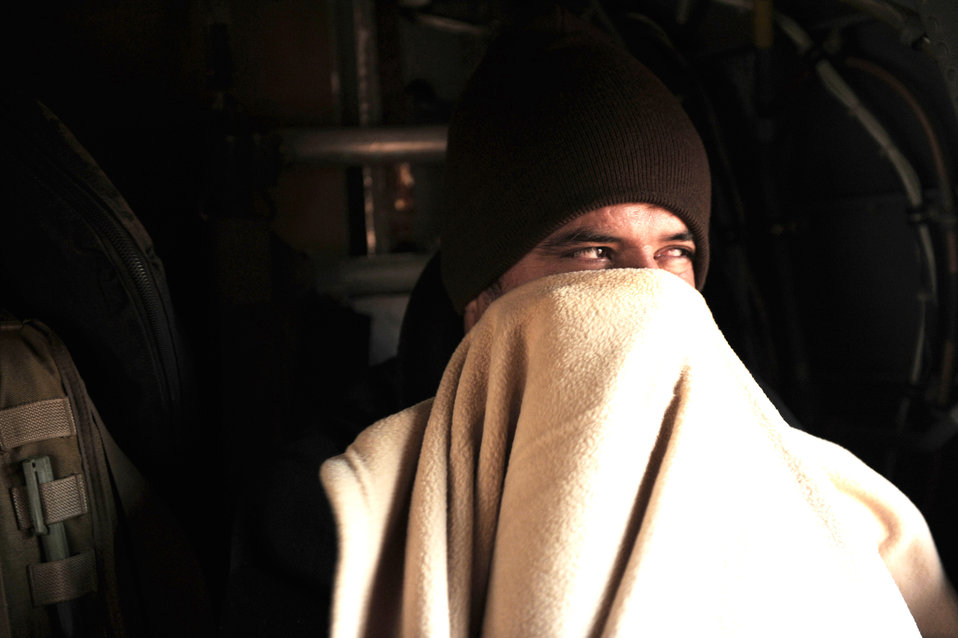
Total-Force Airmen to the rescue in Afghanistan

An Afghan National Army soldier warms himself during a medical evacuation aboard a HH-60G Pave Hawk, Jan. 10, 2010, at Kandahar Airfield, Afghanistan.